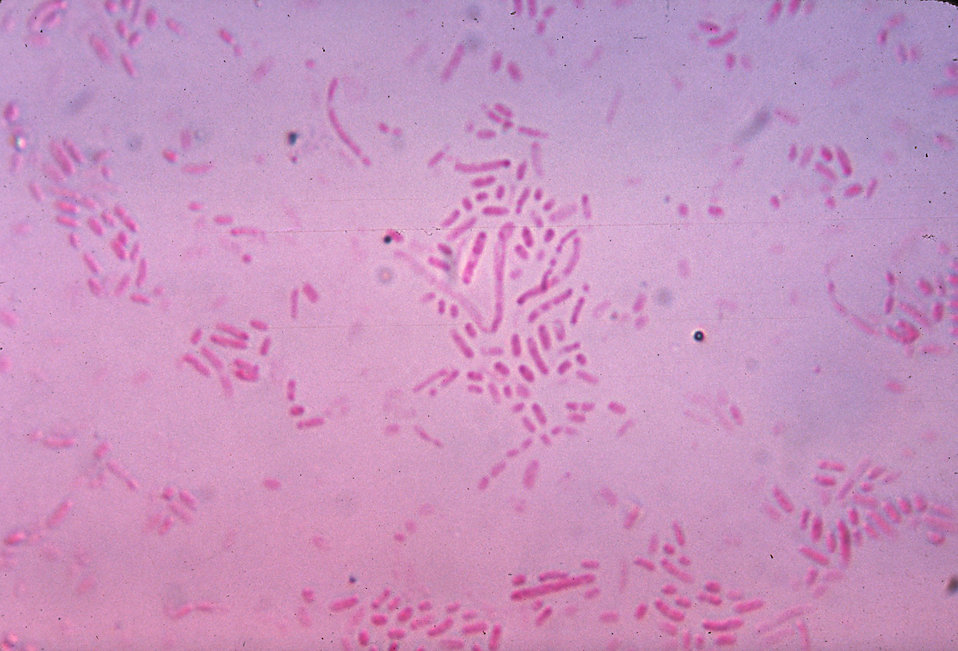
This photomicrograph shows gram-negative Actinobacillus ureae, formerly Pasteurella ureae bacteria grown in a culture medium for 24 hours.